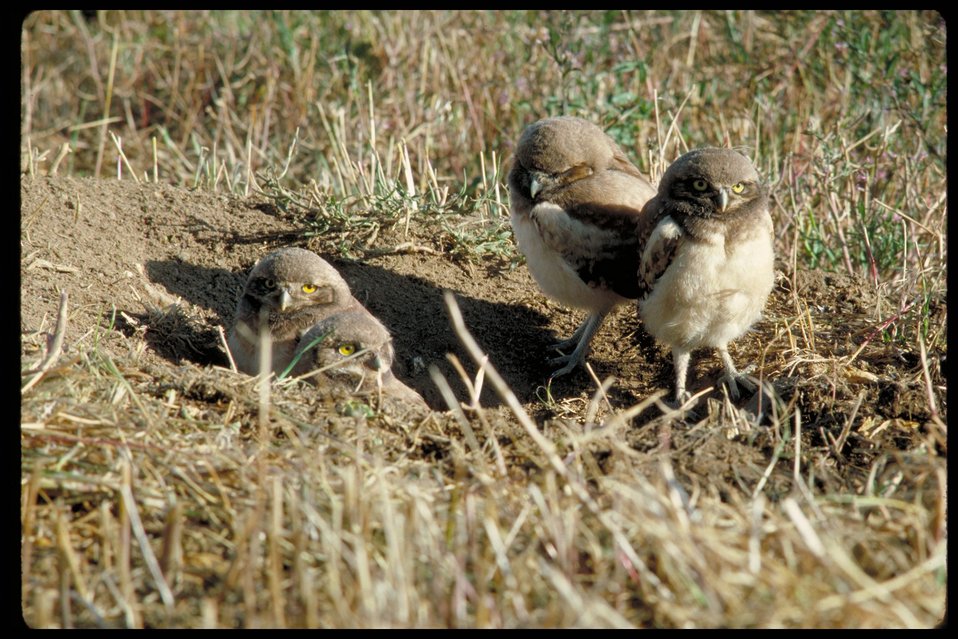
Birds of Prey National Conservation Area BOP Owyhee Field Office LSRD Lower Snake River District